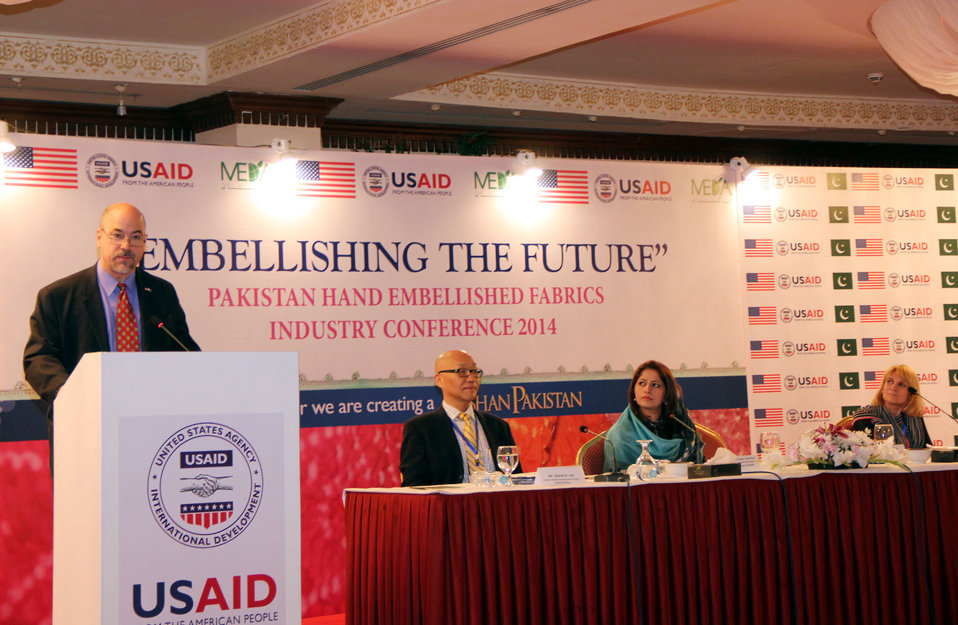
USAID’s Entrepreneurs Project

USAID Deputy Mission Director addressing at Pakistan Hand Embellished Fabrics Industry Conference organized by USAID’s Entrepreneurs Project